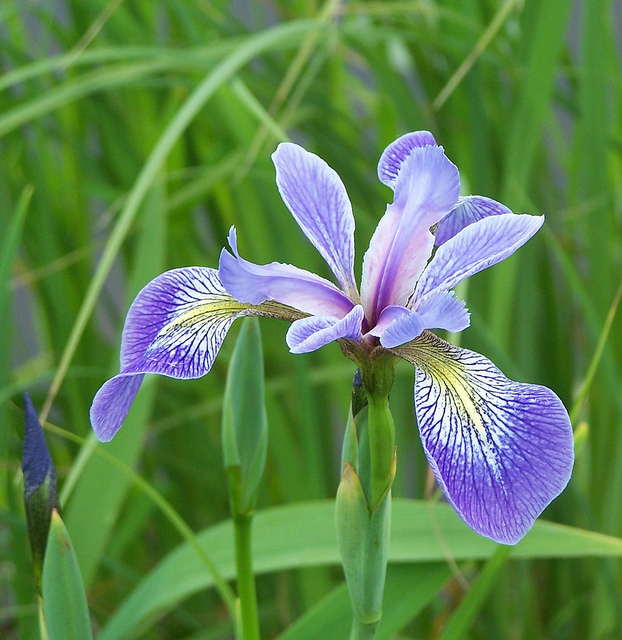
blue flag